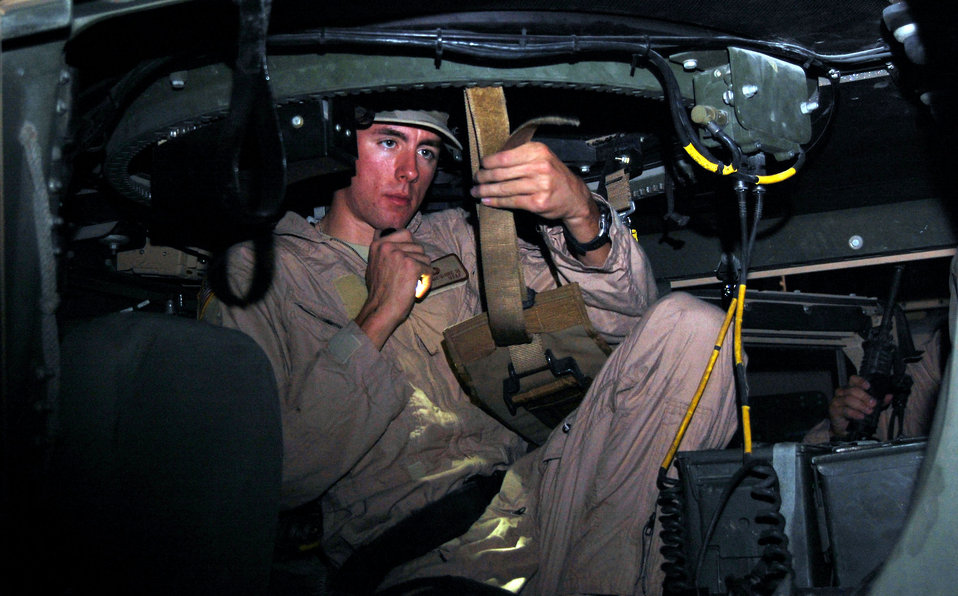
Convoy preparations

Airman 1st Class Byron Mcguire inspects the straps on the turret seat prior to a convoy mission Nov. 12 at Camp Bucca, Iraq. Airman Mcguire, an 887th Expeditionary Security Forces Cobra Squad gunner, is from Moody Air Force Base, Ga.